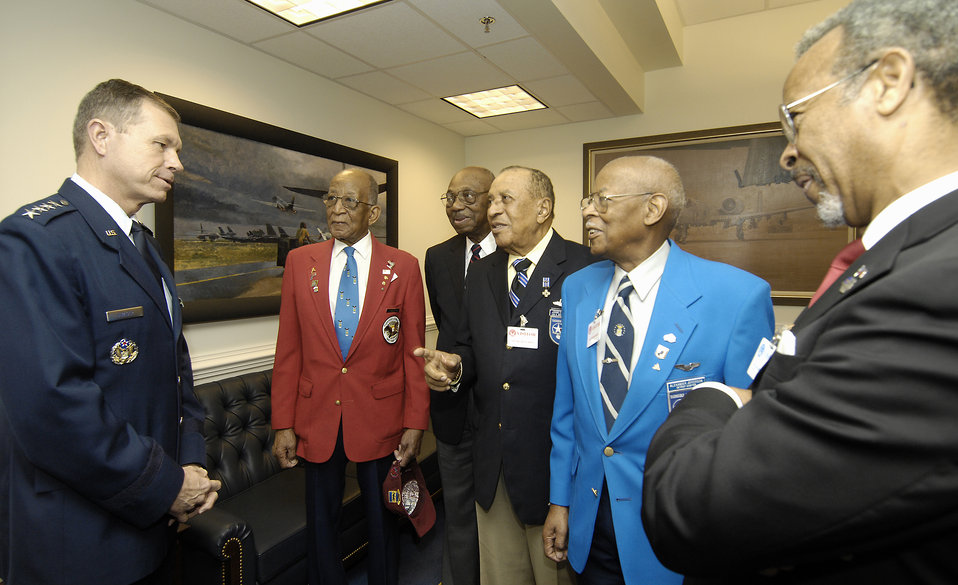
Tuskegee Airmen visit Pentagon

Air Force Vice Chief of Staff Gen. William Fraser III greets Tuskegee Airmen Phillip Wheeler Broome (from left), George Mills Boyd, James C. Warren and Alexander Jefferson, along with their host, retired Lt. Gen. Russell Davis, in the Pentagon April 20. The Airmen and Gen. Davis were in Washington to meet with General Fraser and Air Force Chief of Staff Gen. Norton Schwartz prior to departing on a tour of units in Southwest Asia including the 332nd Air Expeditionary Wing whose origins trace back to the 332nd Fighter Group and the Tuskegee Red Tail Flyers.